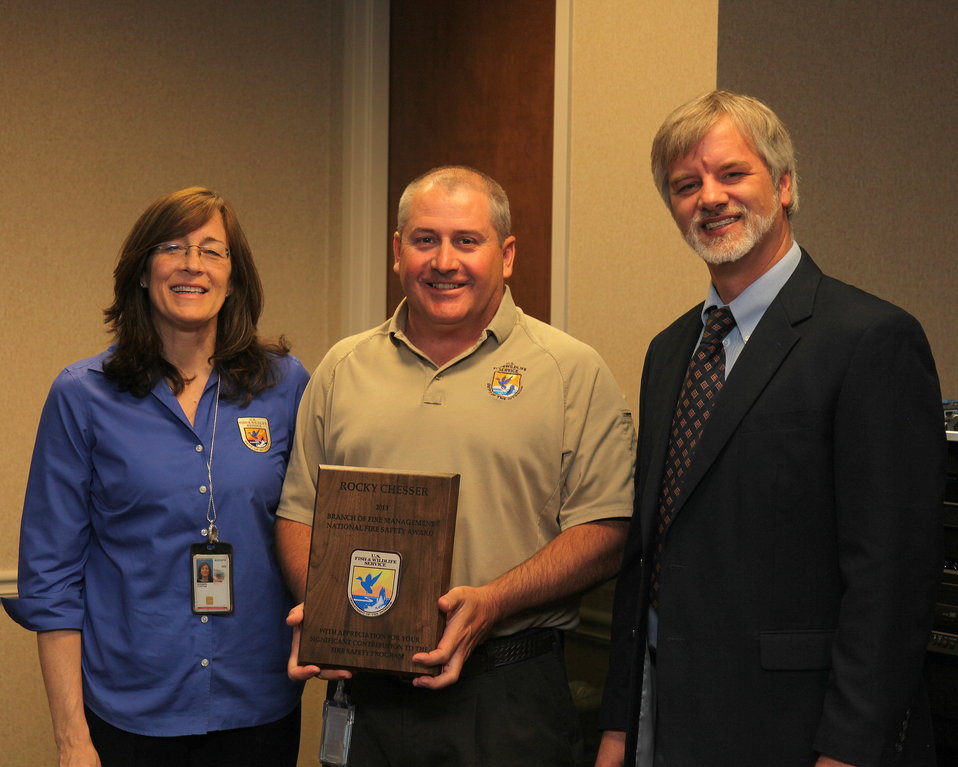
Rocky Chesser wins national award

Maintenance/Equipment Supervisor Rocky Chesser from Okefenokee National Wildlife Refuge in Georgia accepts the first FWS National Fire Safety Award with Cindy Dohner, FWS Southeast Region Regional Director, and John Segar, FWS Fire Director at the National Interagency Fire Center at Boise, Idaho.